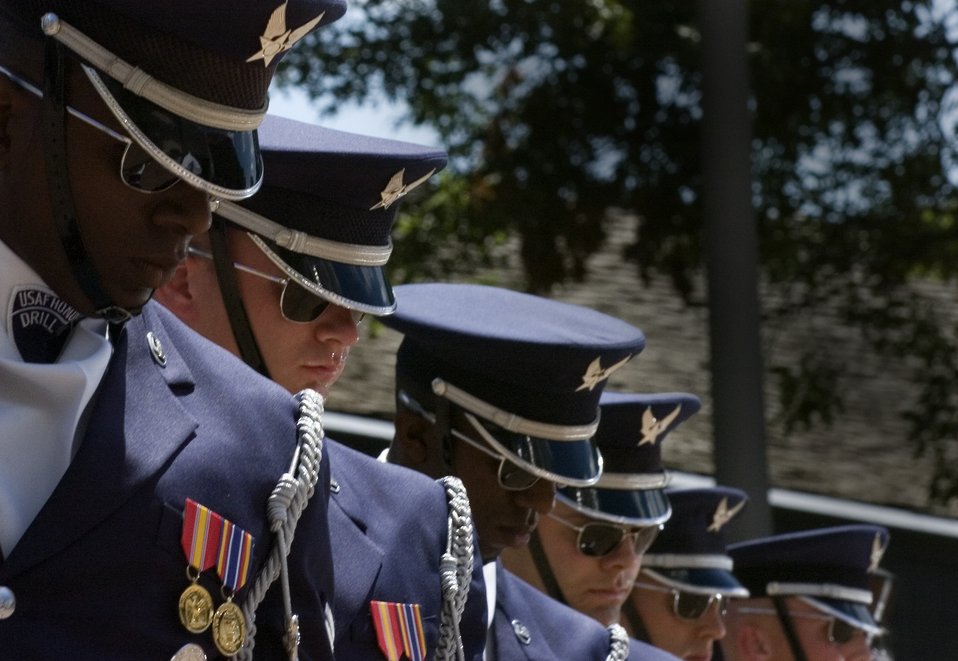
Air Force Week in the Heartland reaches out to Omaha zoo

Air Force Honor Guard drill team members perform Aug. 12 for visitors of the Henry Doorly Zoo in Omaha, Neb. Zoo visitors also had the chance to see the Do Something Amazing display featuring an F-16 Fighting Falcon, a motion simulator and video simulators during Air Force Week in the Heartland.